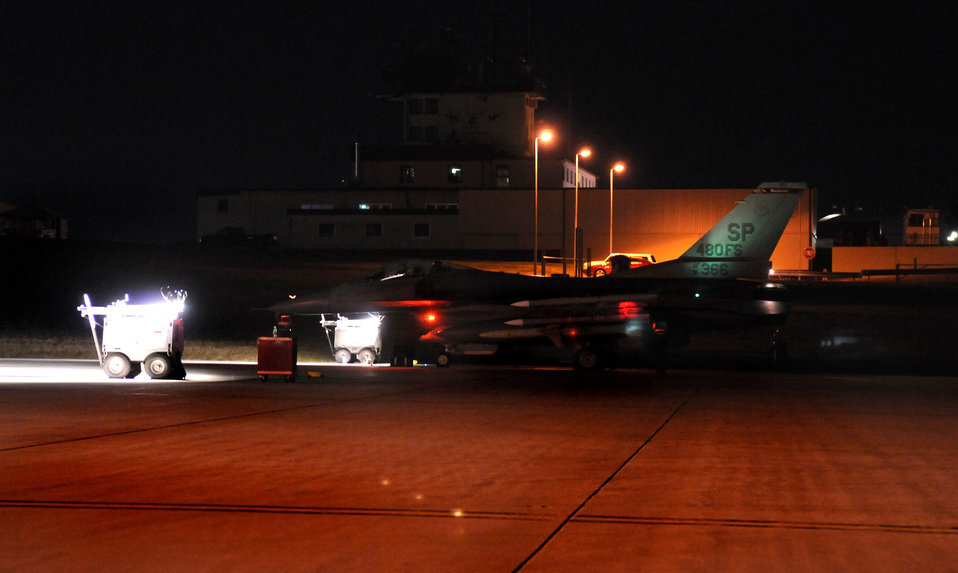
Operation Odyssey Dawn

SPANGDAHLEM AIR BASE, Germany ? A 480th Fighter Squadron F-16 Fighting Falcon prepares for take-off from Spangdahlem Air Base in support of Operation Odyssey Dawn March 19. Joint Task Force Odyssey Dawn is the U.S. Africa Command task force established to provide operational and tactical command and control of U.S. military forces supporting the international response to the unrest in Libya and enforcement of United Nations Security Council Resolution (UNSCR) 1973. UNSCR 1973 authorizes all necessary measures to protect civilians in Libya under threat of attack by Qadhafi regime forces. JTF Odyssey Dawn is commanded by U.S. Navy Admiral Samuel J. Locklear, III.